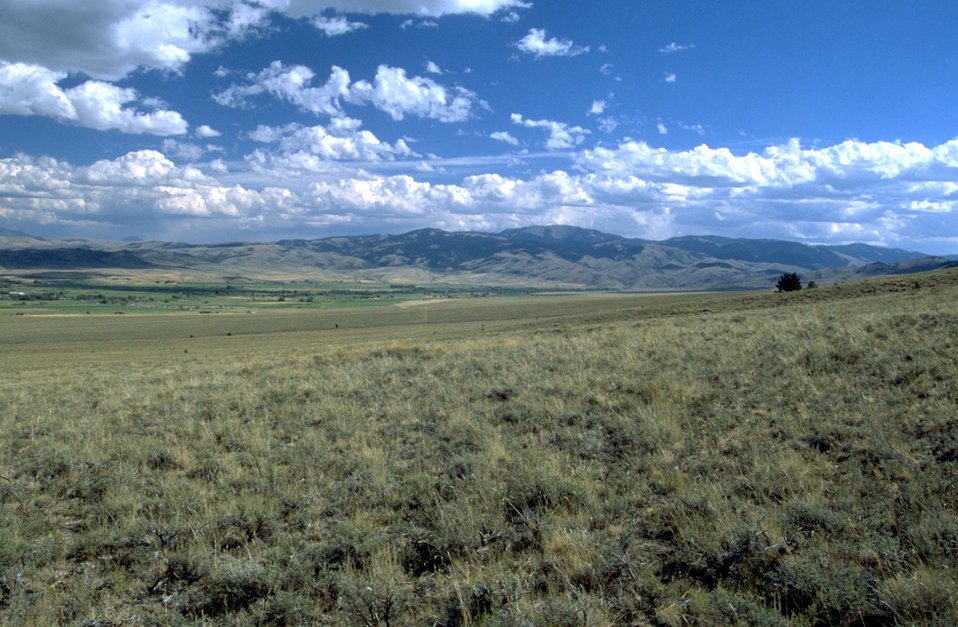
Sage grass hillside overlooking the valley bottom. Interesting cloud formations